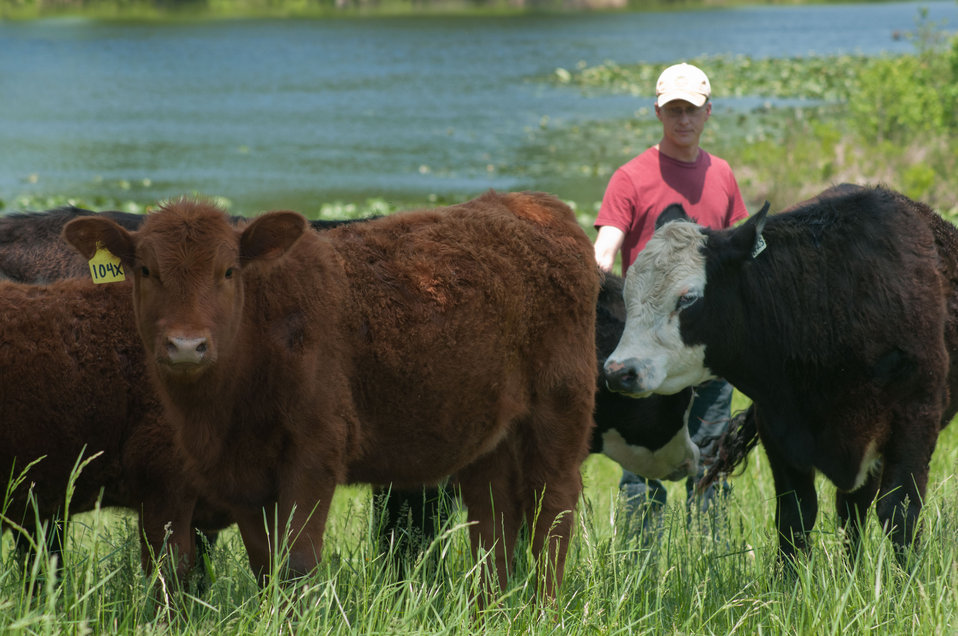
Cattle raised by Bruce Johnson at Dragonfly Farm are free-range, grass-fed, and very stress-free in Beaverdam, VA, on Friday, May 6, 2011, as they spend the day roaming one pasture or another and resting under shade trees. Sequential use of pastures allows the grass and land to re-grow and recover. Dragonfly and other farms produce meat products listed and ordered on Lulus Local Food website and distributed by Fall Line Farms food hub who offer a wide variety of household food staples and specialty items. Members pick their customized orders from an ever changing inventory of fruits, vegetables, meats, soaps, eggs, cheeses, flowers, honey, pastas, sauces, syrups, baked goods, mushrooms, flour and grains. Every Thursday, suppliers team up with other suppliers to deliver customized orders to, one of several pick-up points, designated by the customer in or around the Richmond area.